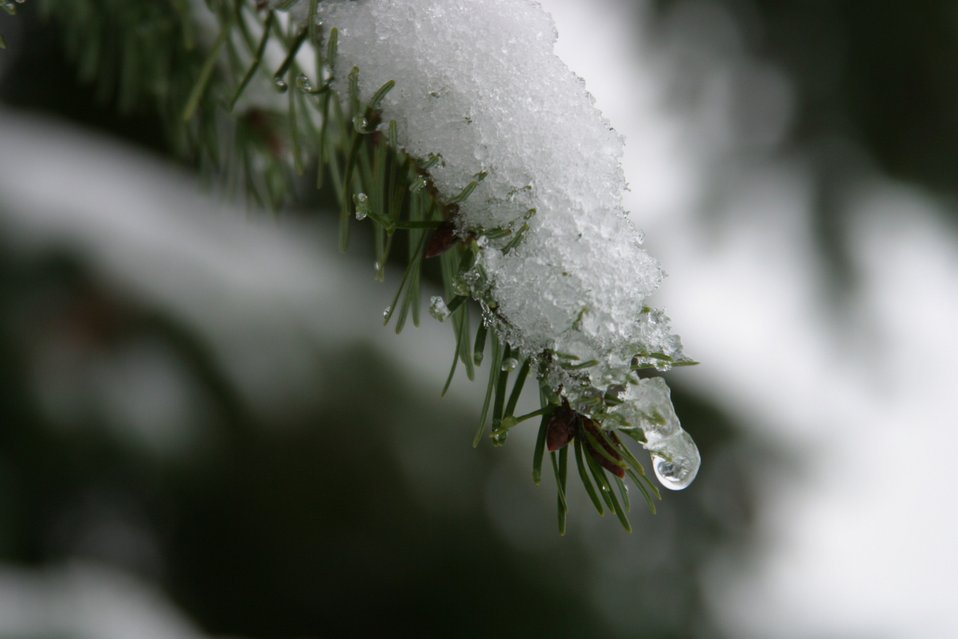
Snow and ice on Douglas Fir Bows and cones during the storm of January 2004.